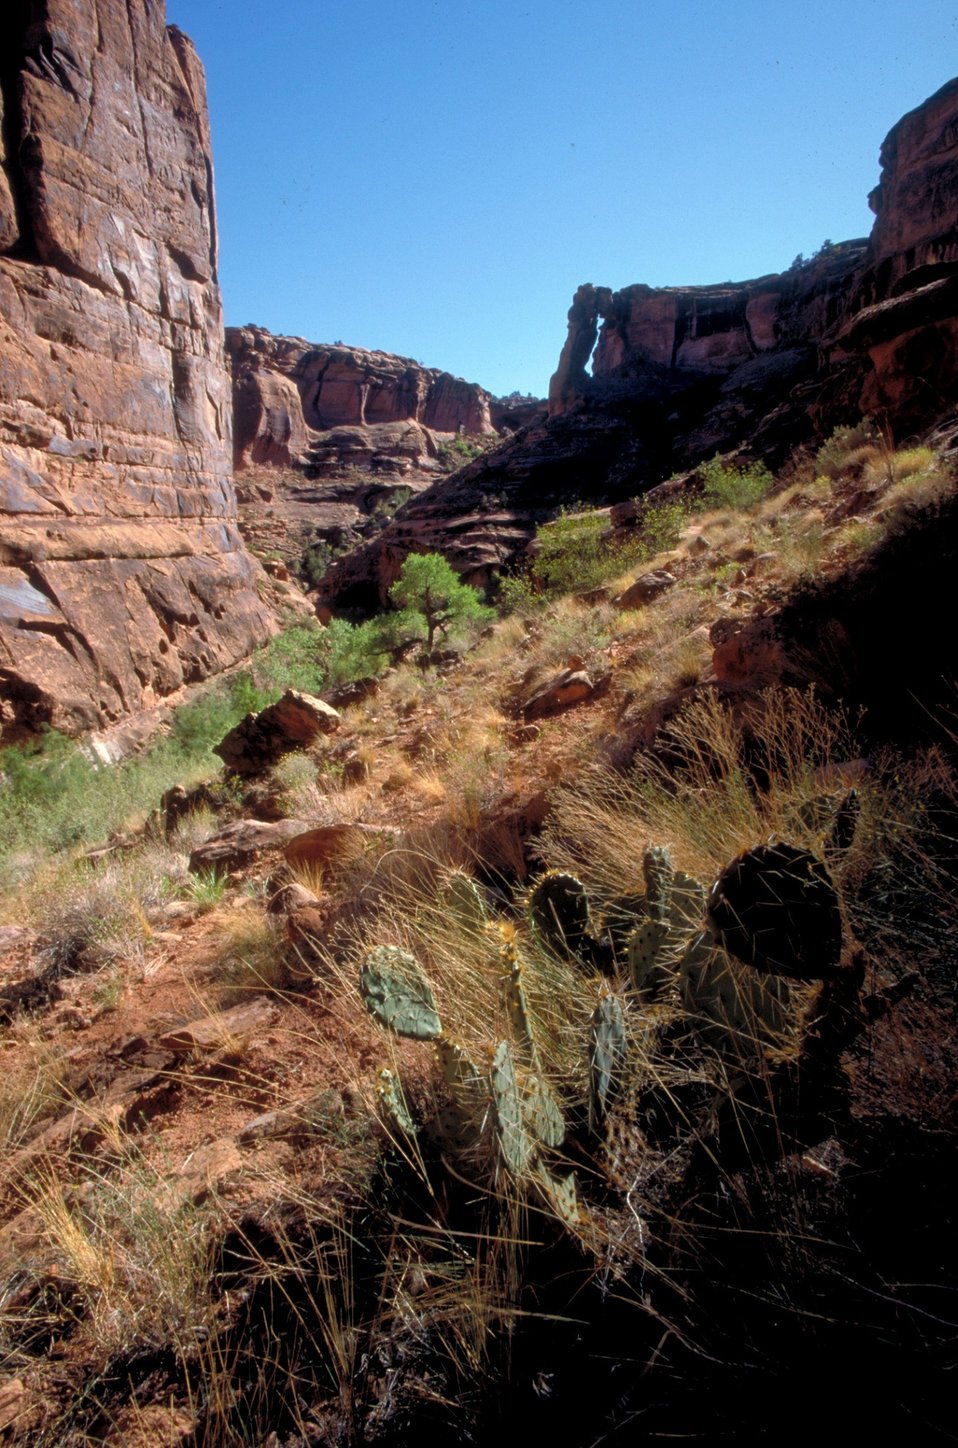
Hunter Canyon near Moab, Utah.